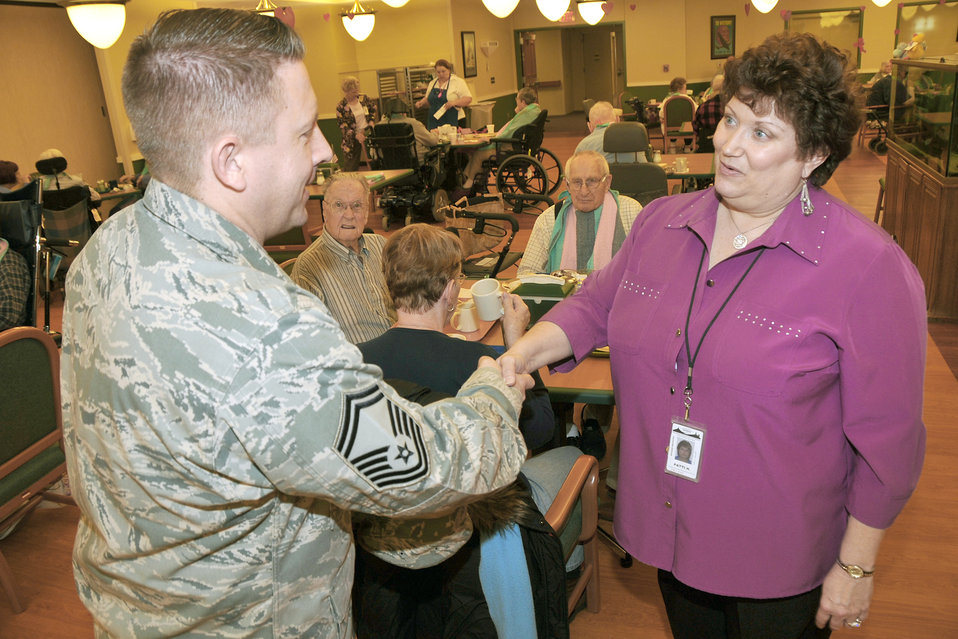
Veterans Home Nebraska

Senior Master Sgt. Matthew Becker is greeted Feb. 16, 2011, by Patti Howe, a volunteer coordinator at the Eastern Nebraska Veterans Home near Offutt Air Force Base, Neb., during one of his periodic visits to the home. Sergeant Becker is assigned to the 55th Aircraft Maintenance Squadron.